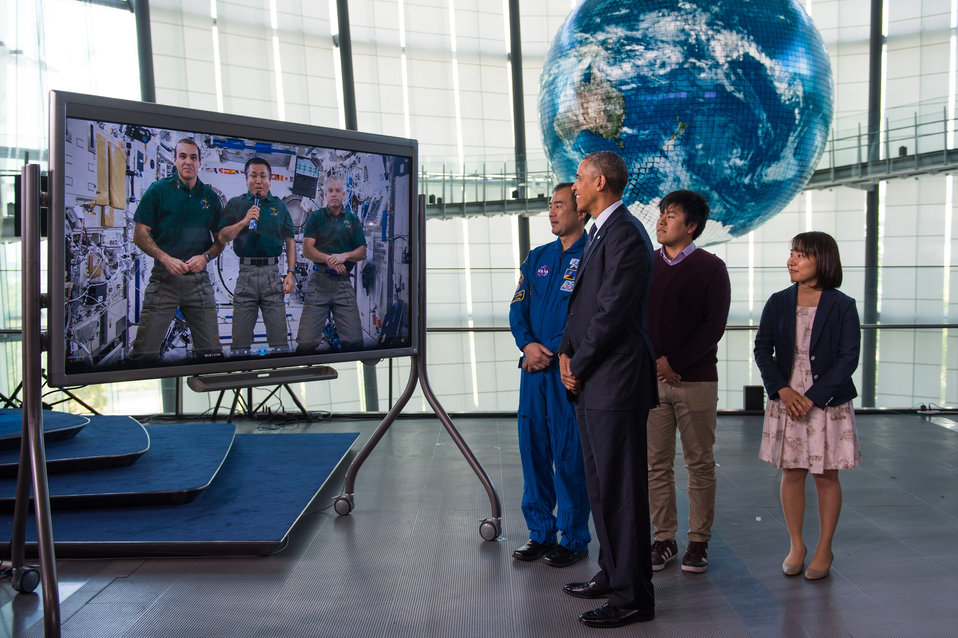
President Obama Watches Space Station Video

U.S. President Barack Obama watches a video message from the International Space Station with Japanese astronaut Soichi Noguchi and students during his visit to the Miraikan (the National Museum of Emerging Science and Innovation) in Tokyo, Japan, on April 24, 2014.